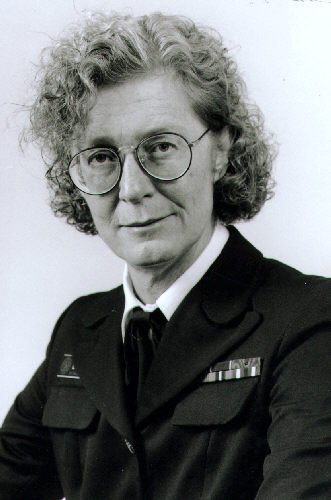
Claire V. Broome, M.D., Acting Director, CDC